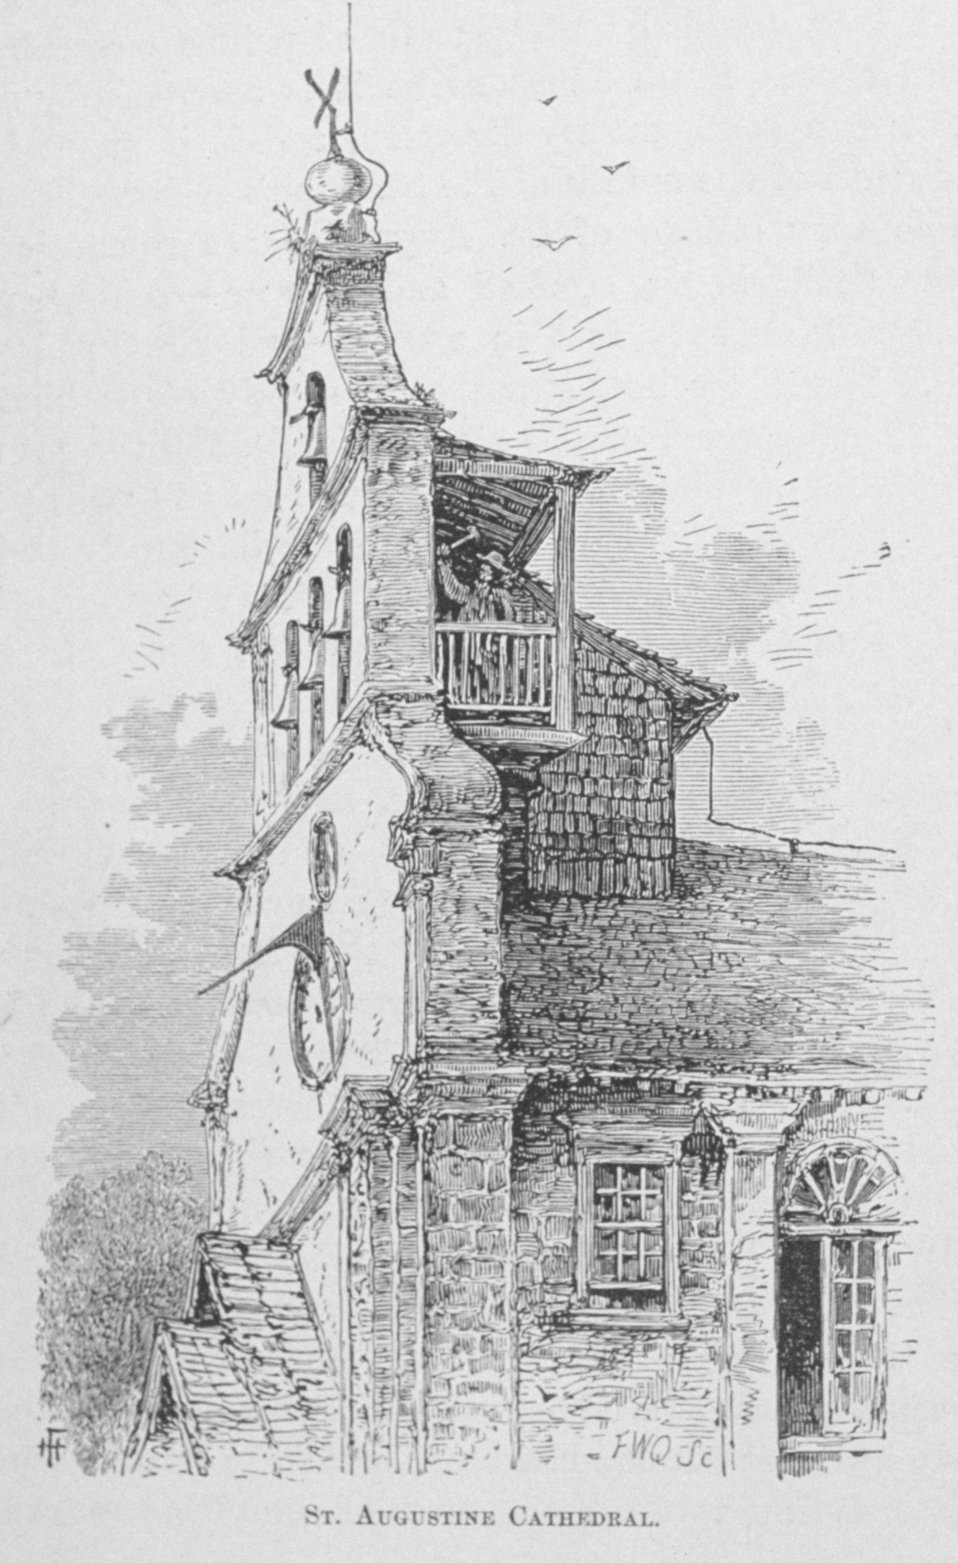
St. Augustine Cathedral - in 'Florida for Tourists, Invalids, and Settlers' by George M. Barbour, 1881. Library Call No. F316 .B23 1881.